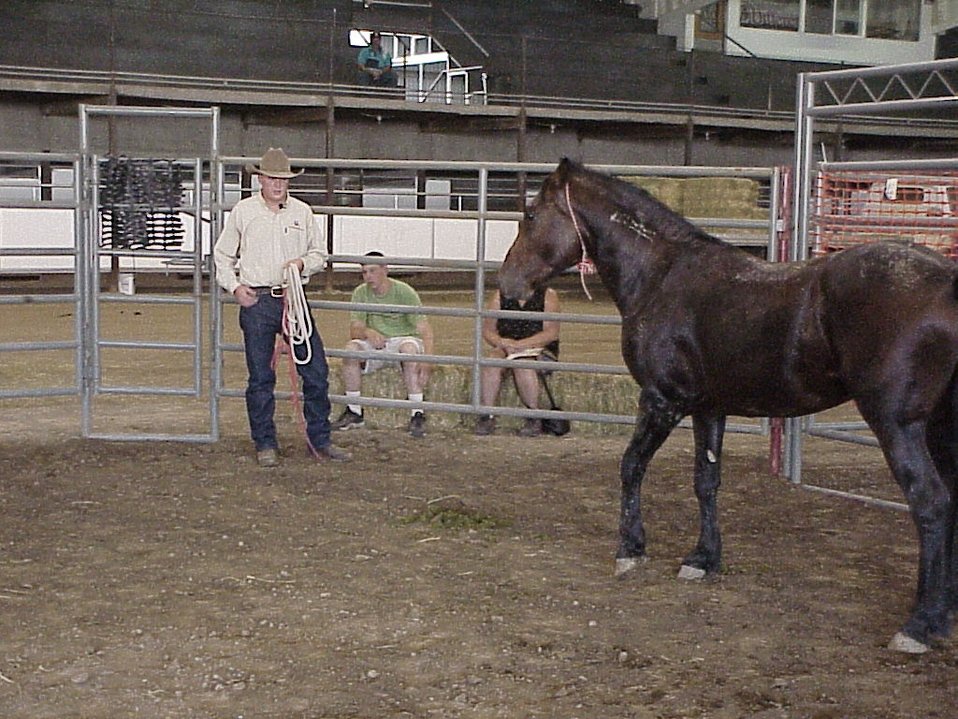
Horse Gentler Mario Johnson Lewiston Wild Horse and Burro Adoption Program Auction WHB indoor auction Cottonwood Field Office UCSC Upper Columbia Salmon Clearwater District